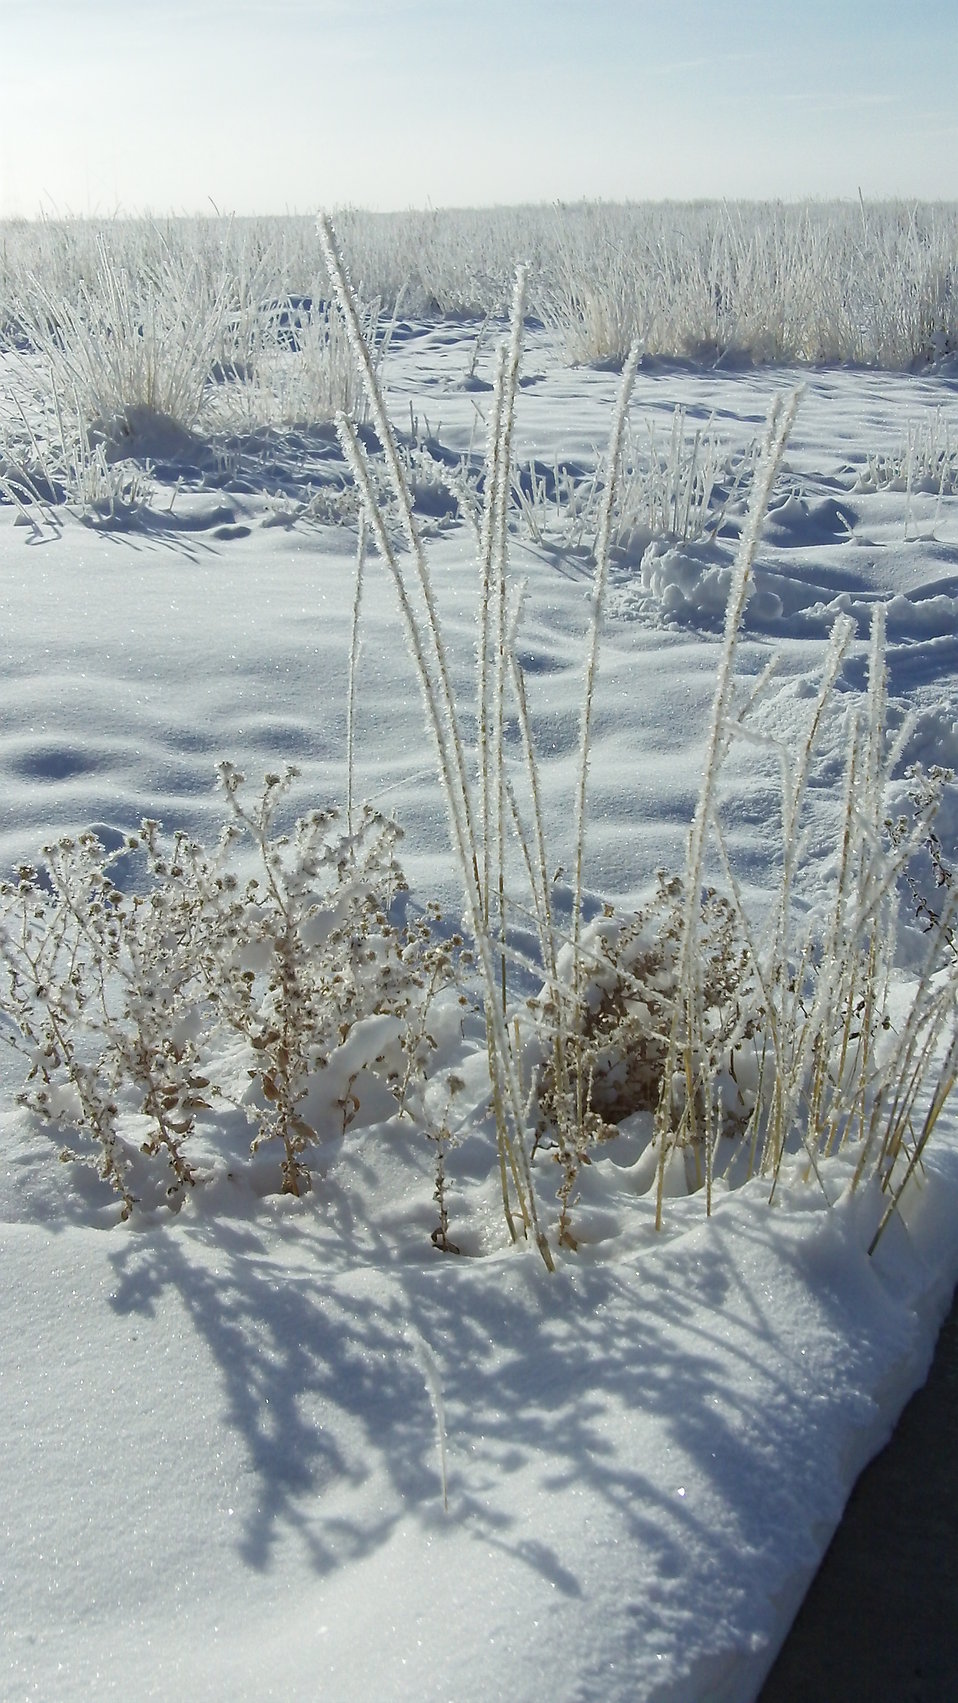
Frozen Plants

Snow covered plants at Bear River Migratory Bird Refuge in Utah.